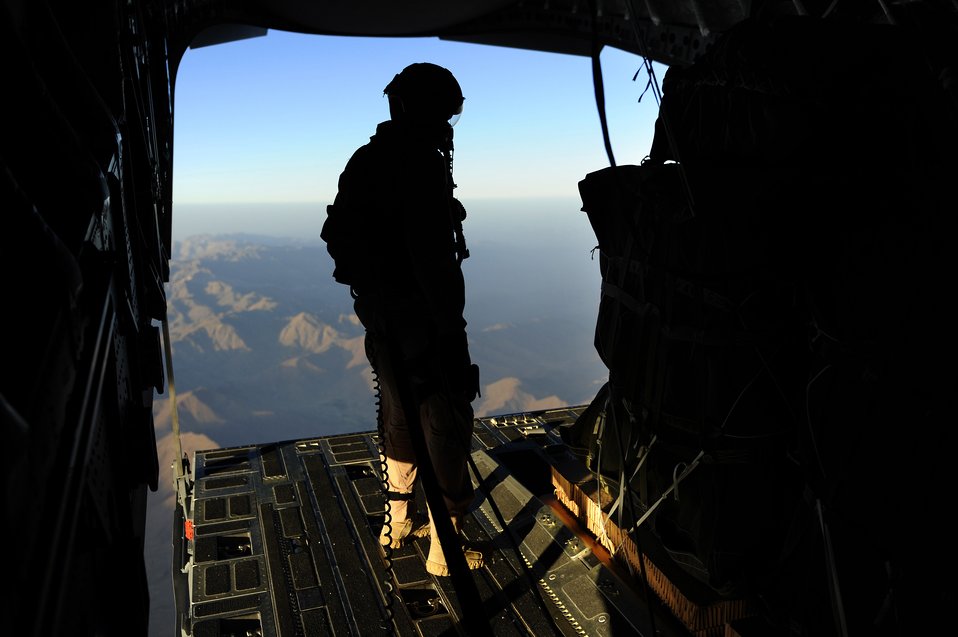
Hanging ten (safely)

Senior Airman Bryce Kester inspects pallets of cargo that will be dropped from a C-17 Globemaster III Aug. 27, 2009, to a forward operating base in Afghanistan. Airman Kester is a loadmaster from the 817th Expeditionary Airlift Squadron, and deployed from McChord Air Force Base, Wash.